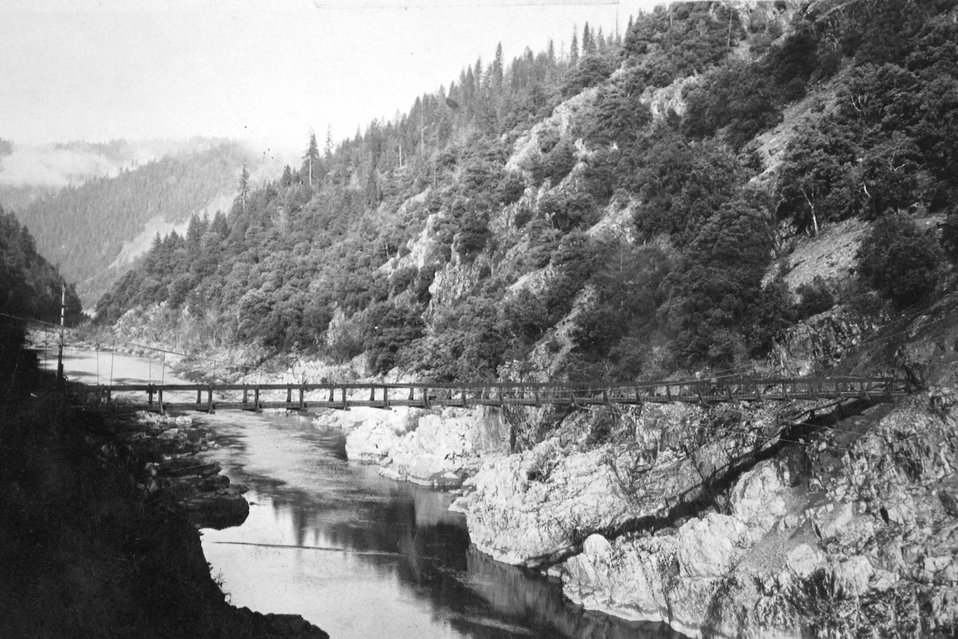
Sanderson's Bridge built in 1907 and destroyed by the 1927 flood. Concrete bridge footings remain on the river banks today.